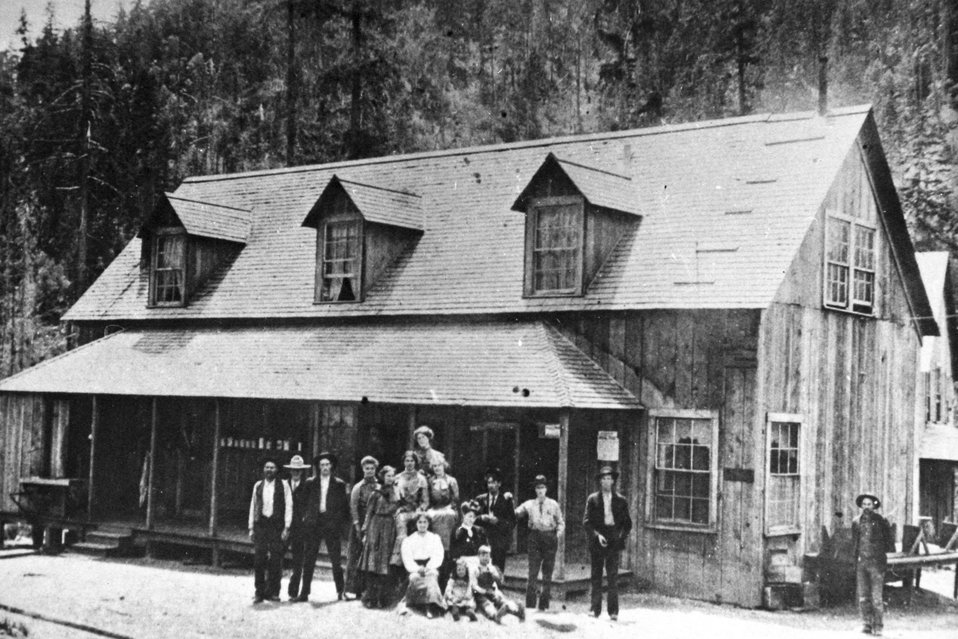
West Fork Store at Cow Creek